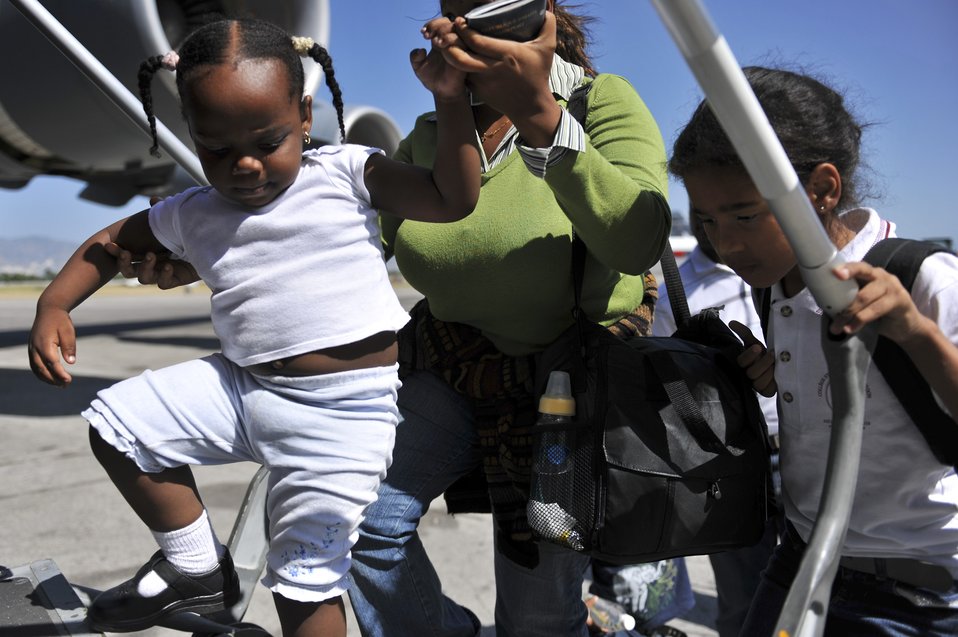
Evacuation

A little Haitian girl carefully boards a C-17 Globemaster III at Toussaint L'Ouverture International Airport in Port-au-Prince, Haiti, Jan. 23, 2010. More than 200 people left the country on this flight. Aircraft from all over the world are flying into the airport to drop off humanitarian aid and transport people out of the country in the aftermath of the devastating earthquake Jan. 12.